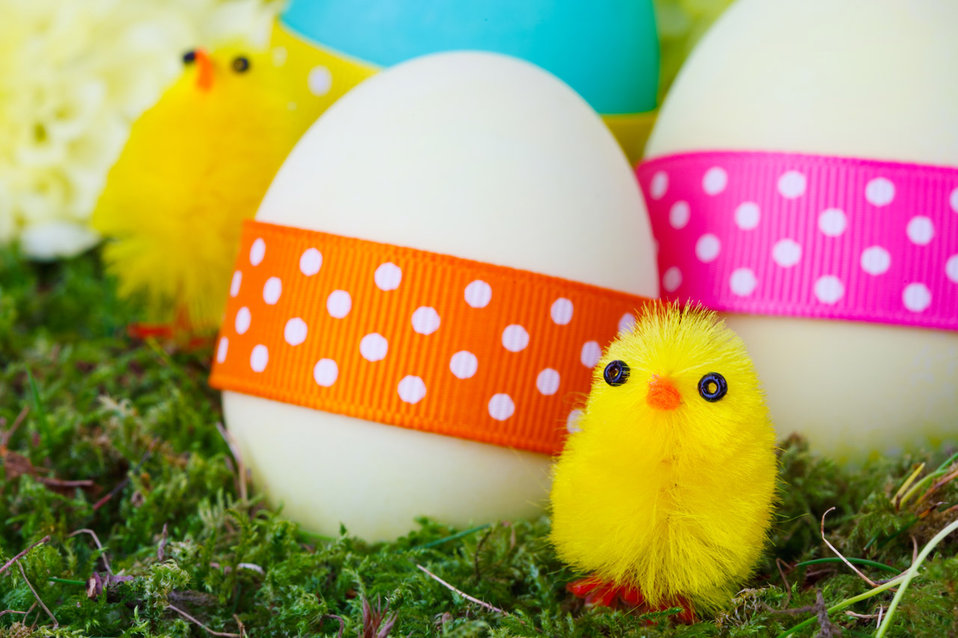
Easter chicks and eggs

Yellow chicks among colorful easter eggs.